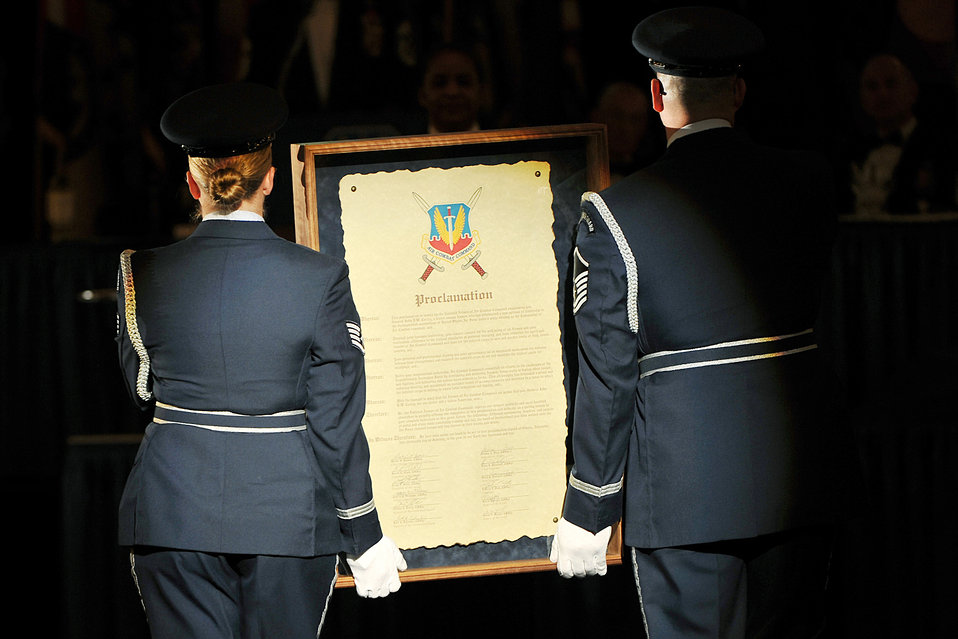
Order of the Sword

OFFUTT AIR FORCE BASE, Neb. ? Base Honor Guard members carry a proclamation scroll during the Air Combat Command Order of the Sword ceremony at the Doubletree Hotel in Omaha, Neb., Jan. 14. The proclamation declared retired Gen John D.W. Corley, former Air Combat Command commander, ?a leader among Airmen.?

U.S. Air Force Photo by/Charles Haymond
[CLEARED] by Deborah Aragon